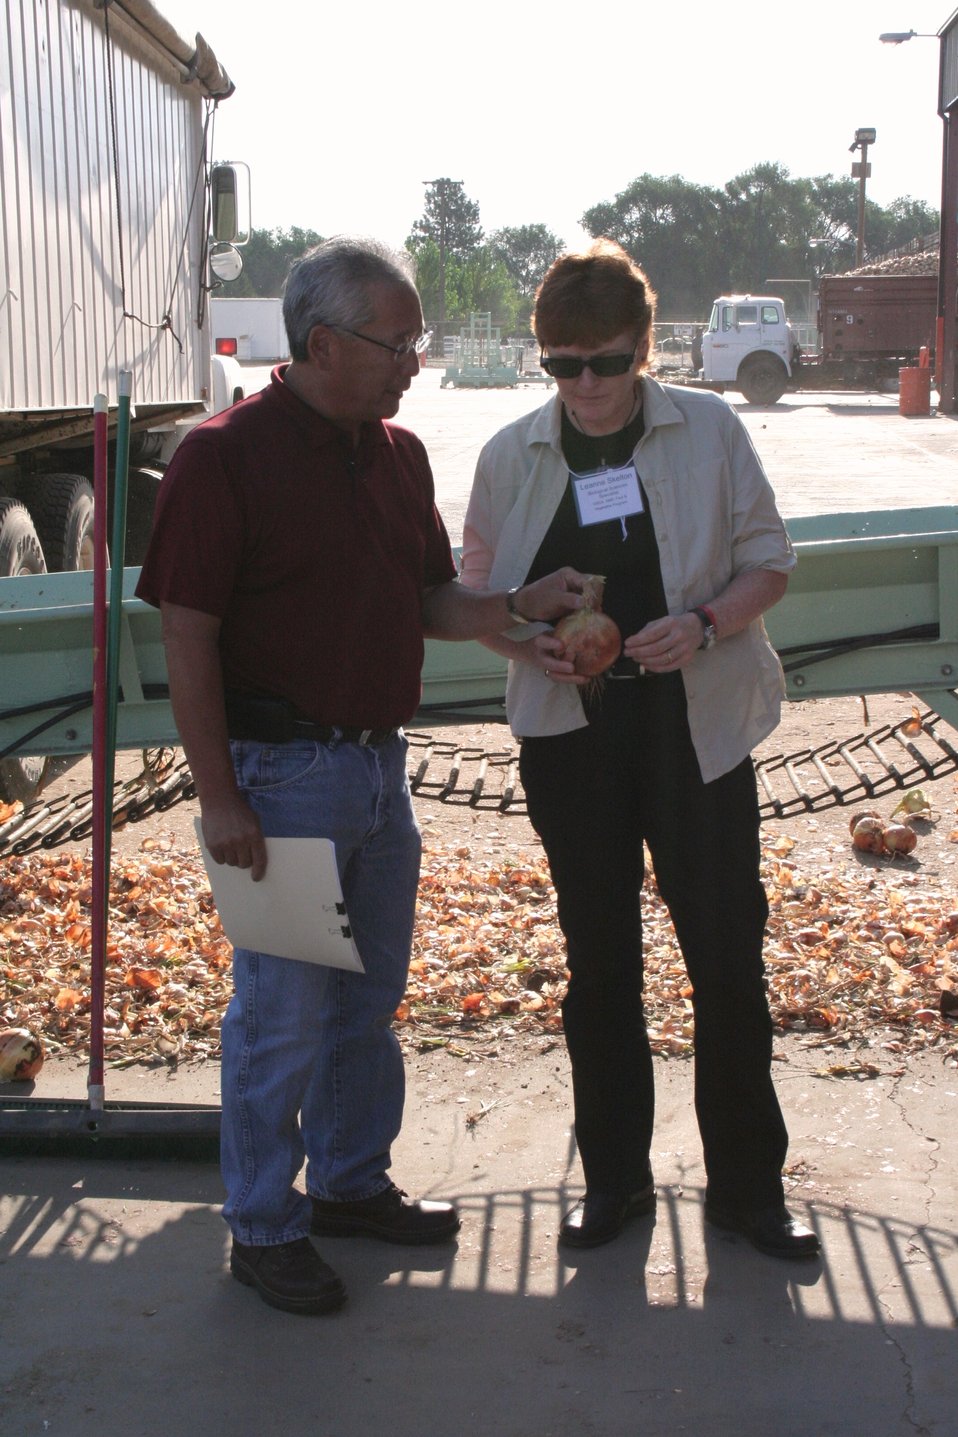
On the Road with Mike Taylor

FDA Deputy Commissioner Michael Taylor (not shown) and colleagues started a five-day tour of the Pacific Northwest on Sunday, Aug. 11, 2013 -- visiting Idaho, Oregon and Washington -- to get a first-hand look at produce production and irrigation operations, and to discuss the proposed Produce Safety Rule with growers, food industry representatives and state officials. This photo shows an employee of Murakami Produce with Leanne Skelton of the U.S. Department of Agriculture. Murakami Produce is a seasonal packer and shipper of dry bulb onions located in Ontario, Ore. For more about Mike's multi-region tour, read these FDA Voice blog posts:

• Hearing the Concerns of Maine Growers Striving for Agricultural Diversity
• On the Road with Mike Taylor: Touring the Pacific Northwest
• On the Road with Mike Taylor, Day 2: Frank Talk in Farm Country
• On the Road with Mike Taylor, Day 3: Families and Partnerships
• On the Road with Mike Taylor, Day 4: Looking to the Future